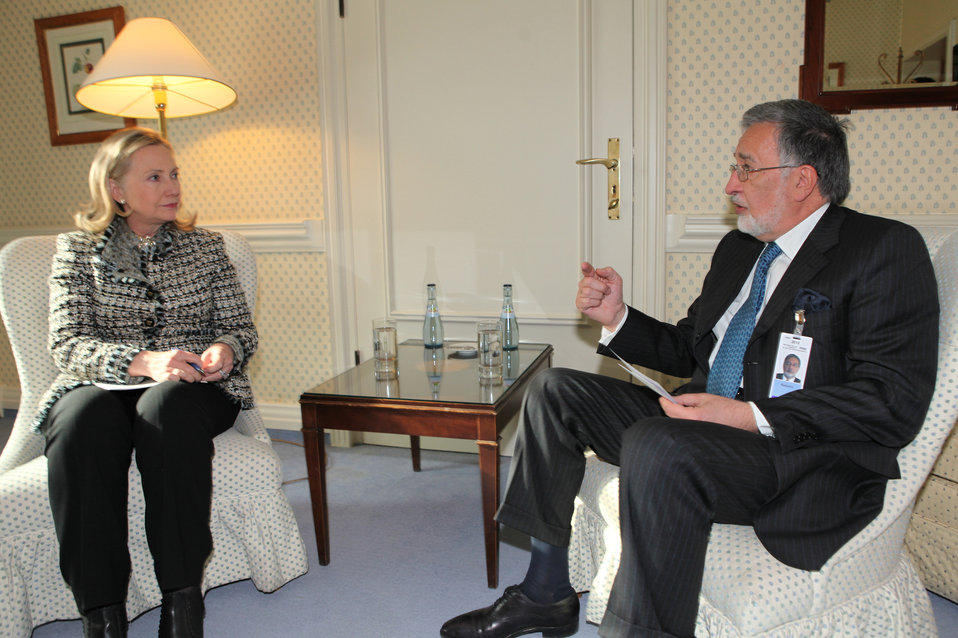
Secretary Clinton Meets With Afghan Foreign Minister Rassoul

U.S. Secretary of State Hillary Rodham Clinton meets with Afghan Foreign Minister Zalmai Rassoul in Munich, Germany, on February 4, 2012.